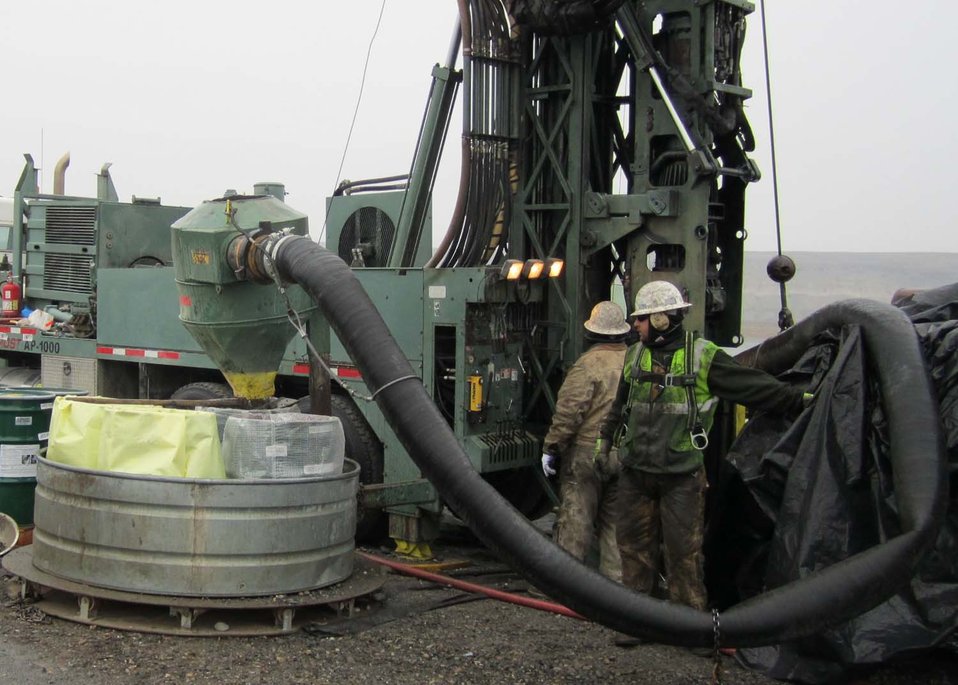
Drilling at the Hanford site

Recovery Act-funded work at the Hanford site.